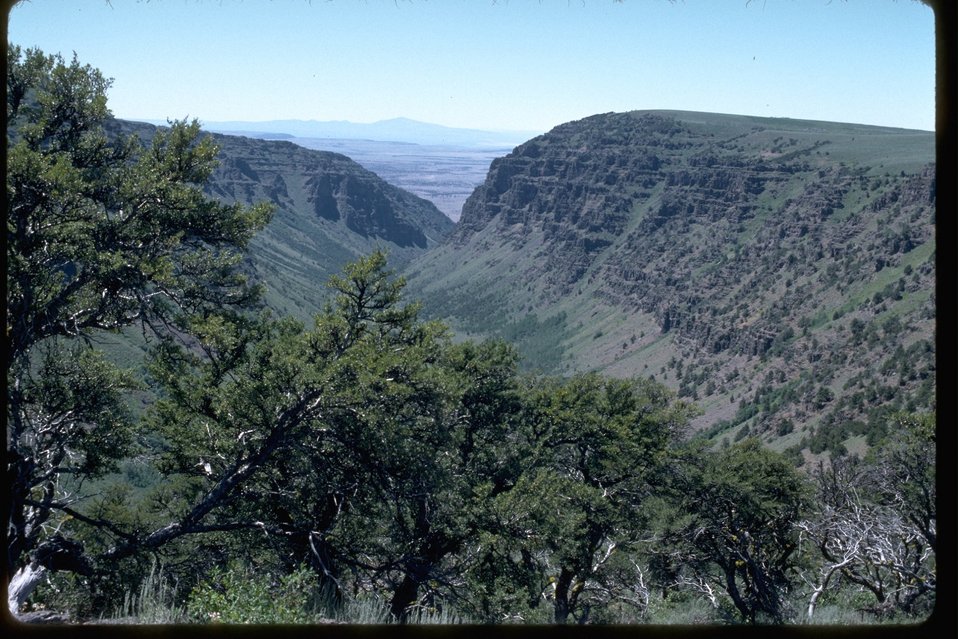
From the mouth of the gorge at Rooster Comb, looking up the Little Blitzen Gorge with Catlow Valley in the background.